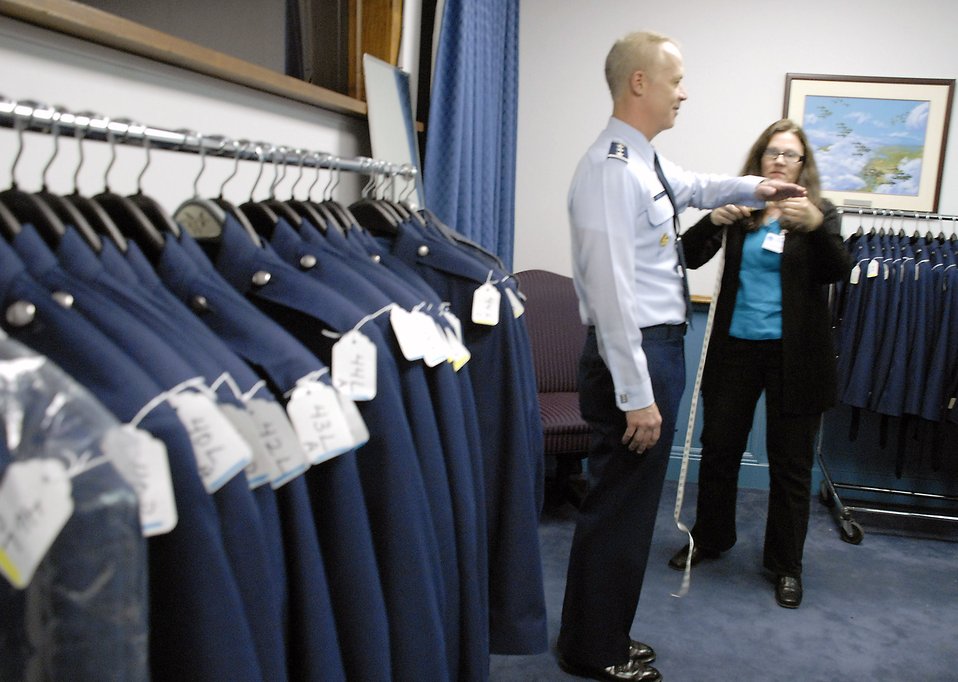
The heritage look

Lt. Gen. Richard Y. Newton III gets measured during a heritage coat fit/wear test April 8 at the Pentagon. Measurements from various Airmen were collected by members of the Air Force Uniform Program Office so any fit adjustments can be made before the heritage service coats get field tested throughout the Air Force. General Newton is the Air Force chief of staff of manpower and personnel.